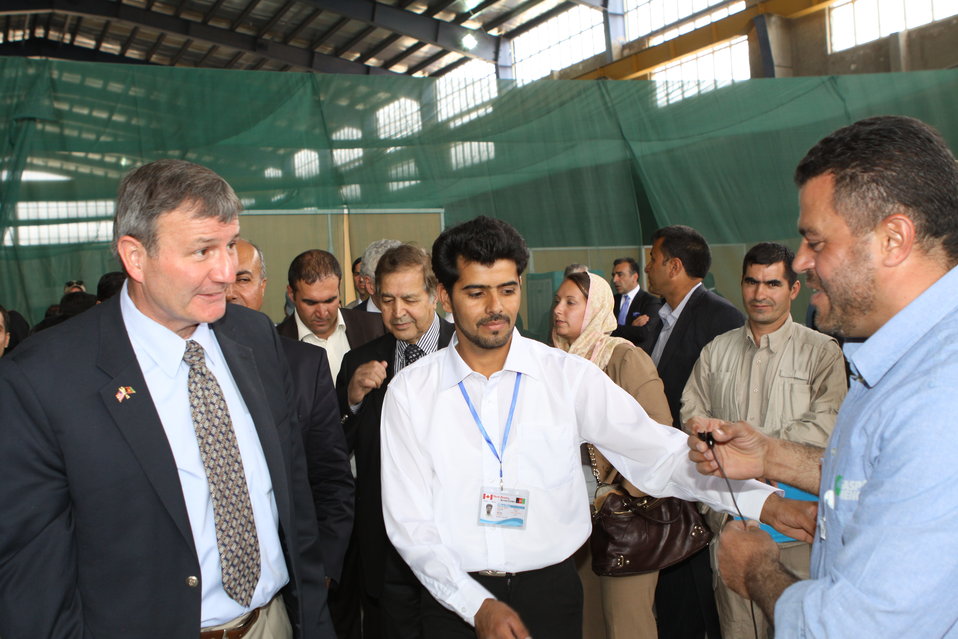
100525 Hirat Marble Conference 462